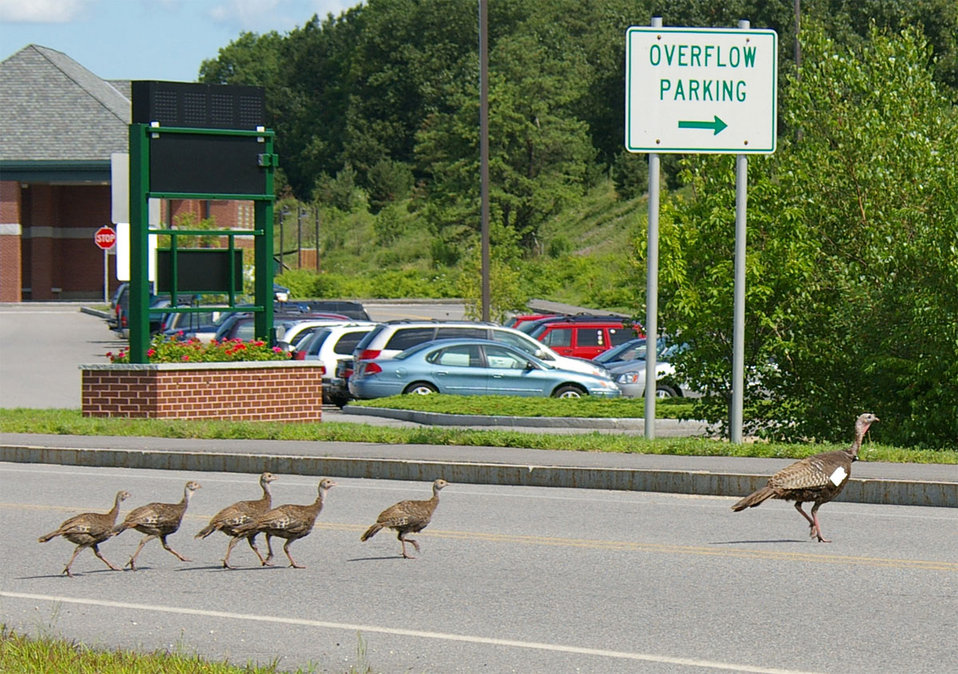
A turkey hen and her young (poults) cross a road near an airport in New Hampshire. The hen wears a tag and transmitter that helps APHIS Wildlife Services biologists follow their habits and movements.